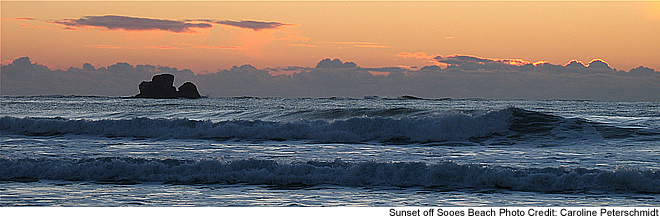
Sunset at Sooes Beach

Sooes Beach is at the mouth of the Sooes River in the northwest reaches of the Olympic Peninsula in Washington State. Makah National Fish Hatchery is located a mile inland on the Sooes River.